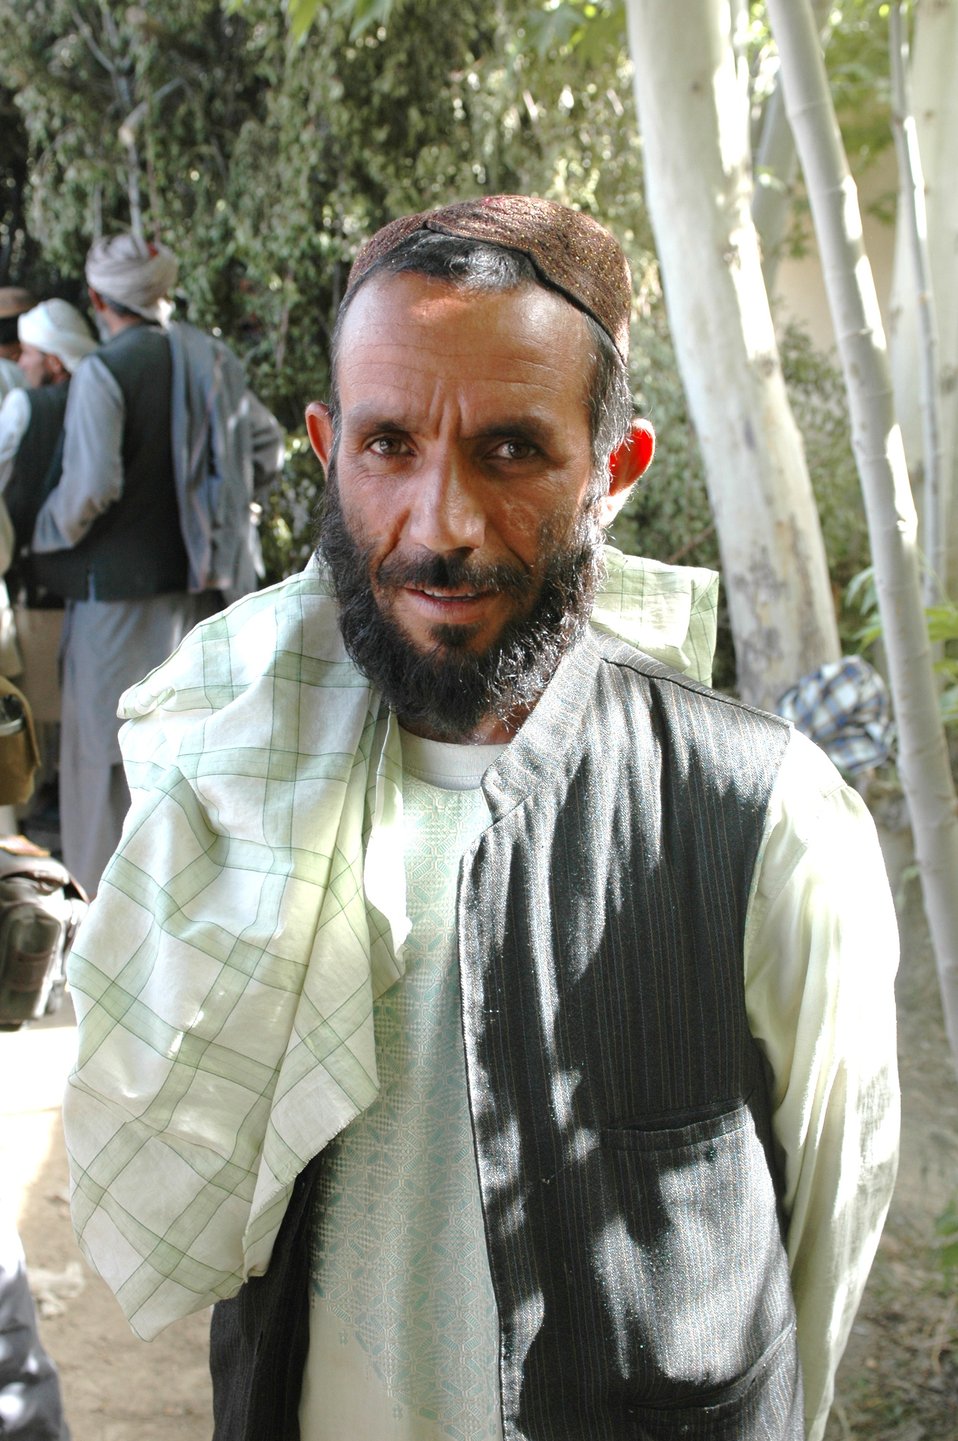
Dr Shah Visits Argandab April 10, 2010